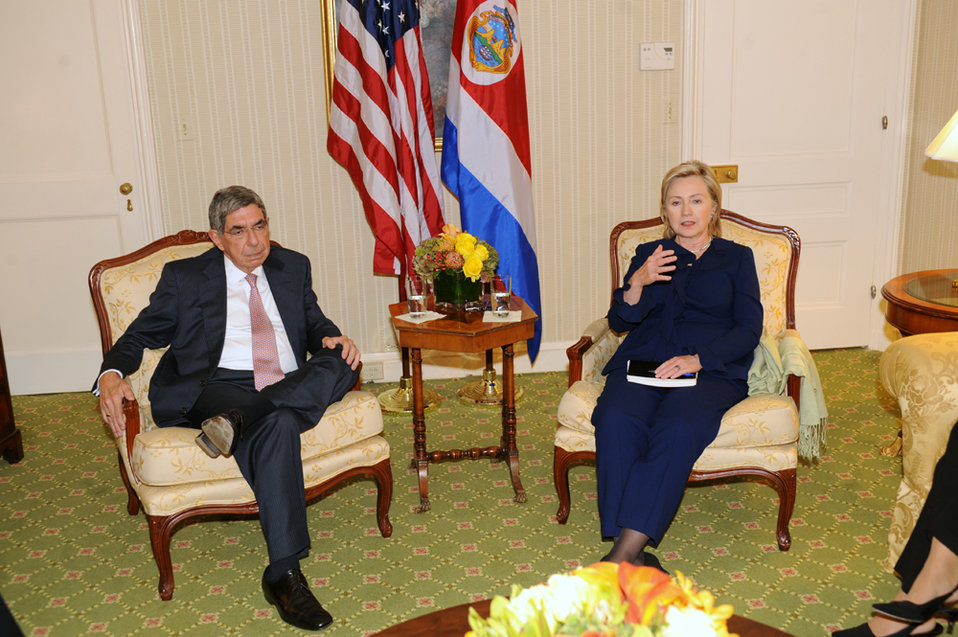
UNGA 2009: Secretary Clinton Meets With Costa Rican President

U.S. Secretary of State Hillary Rodham Clinton meets with Costa Rican President Óscar Arias at the Waldorf Astoria hotel during the 64th Session of the UN General Assembly in New York City, New York September 21, 2009.